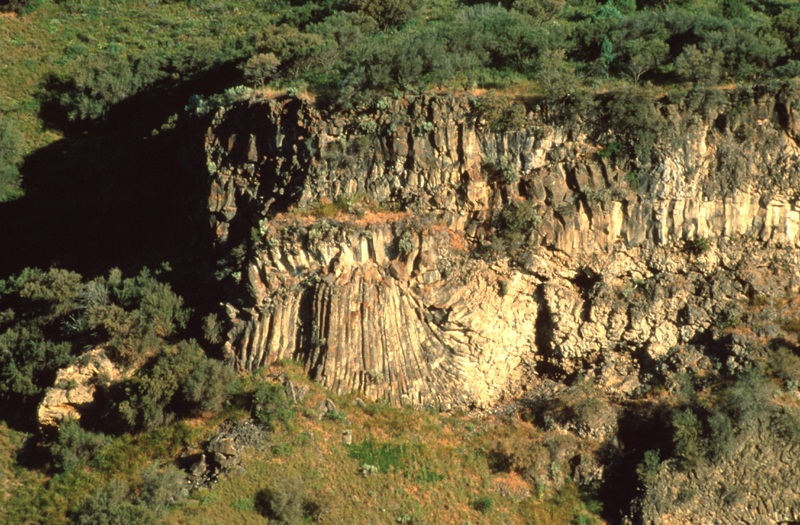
South Fork of the Snake River